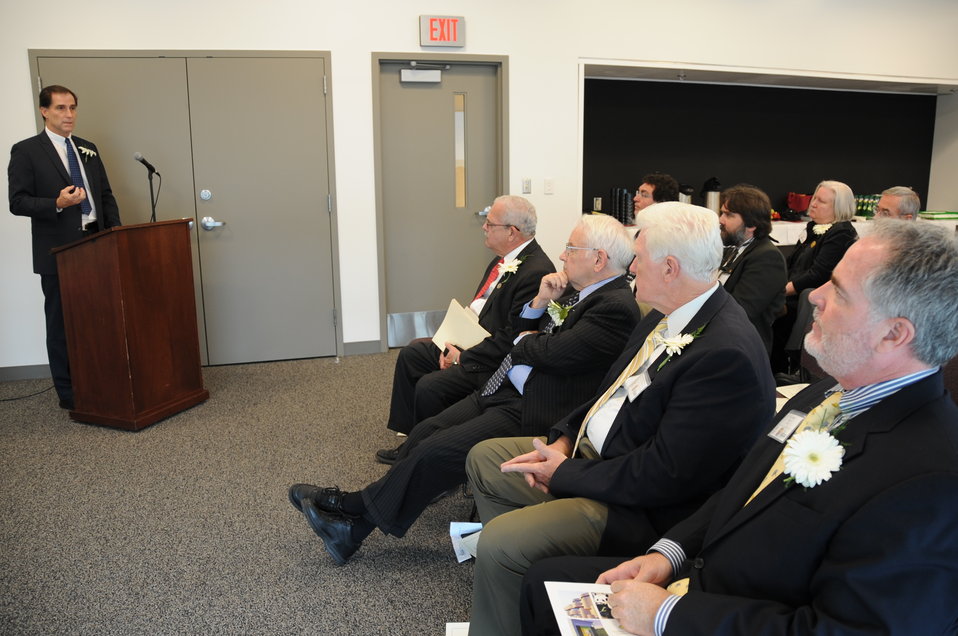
Together in Conservation

Memorandum of Understanding Signing Ceremony with U.S. Fish and Wildlife Service, Smithsonian Institution, and George Mason University. October 26, 2012